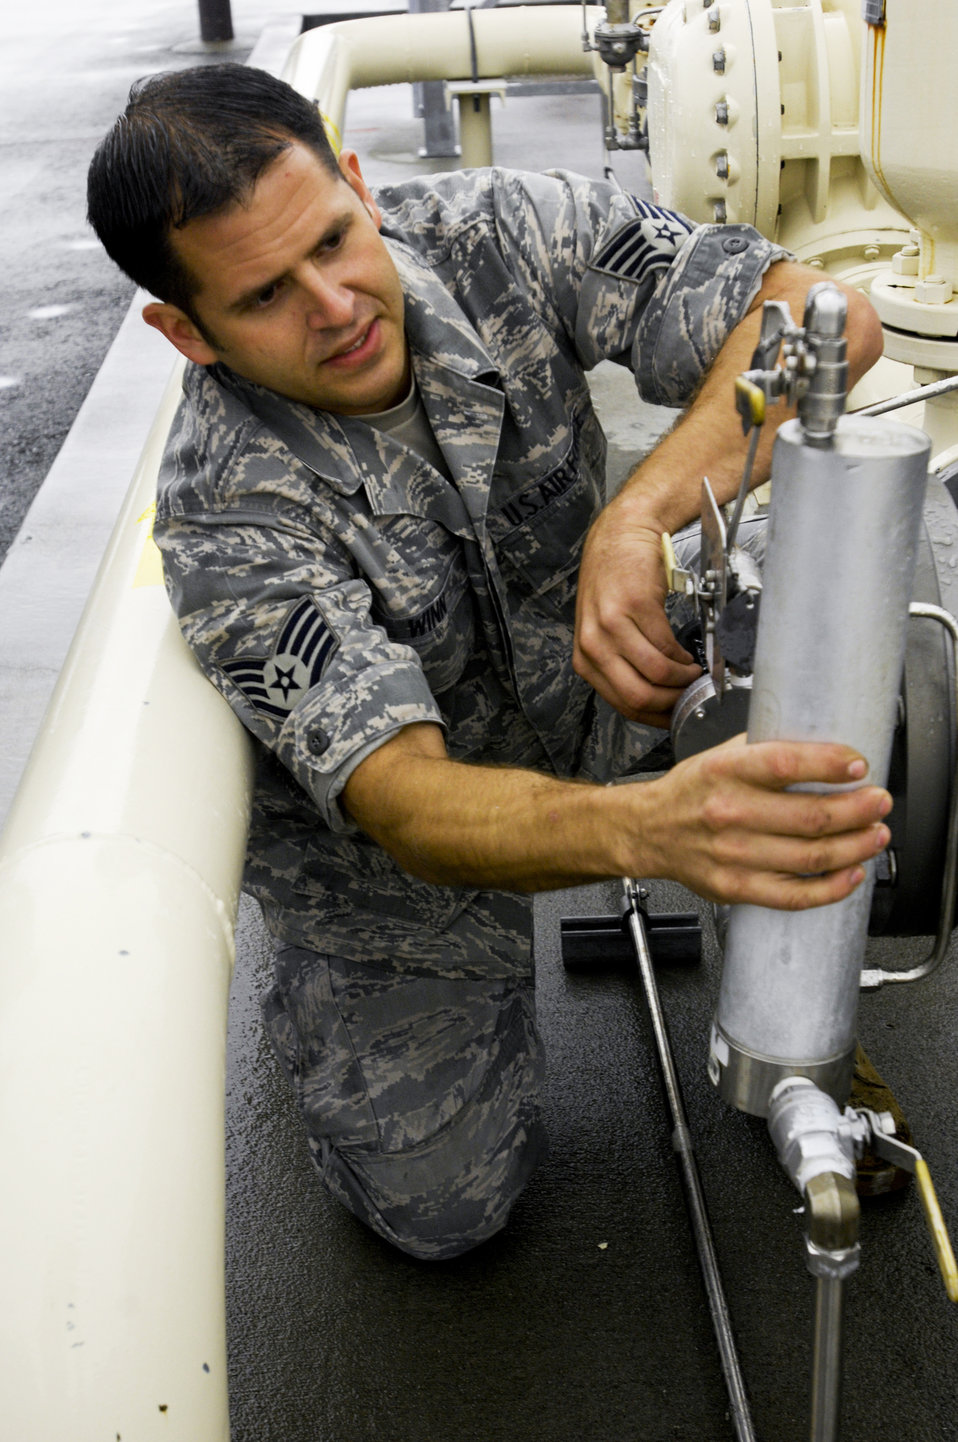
Airman regulates the amount of Plus 100 being added to fuel

Staff Sgt. Jesse Winn regulates the amount of Plus 100 being blended into the JP-8 aviation fuel Sept. 1, 2009, at Elmendorf Air Force Base, Alaska. Base members began using Plus 100 additive in their JP-8 aviation fuel Sept. 1. The additive helps prevent buildup in F-15 Eagle and F-22 Raptor engines; therefore it will reduce the amount of maintenance needed on those engines. Sergeant Winn is assigned to the 3rd Logistics Readiness Squadron.